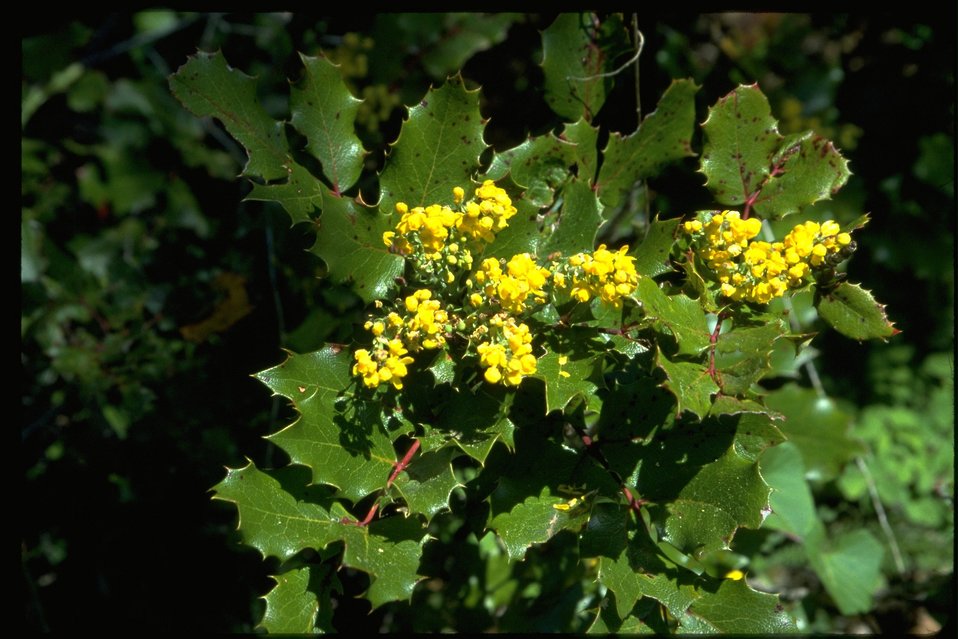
Medium shot of Oregon Grape bloom.